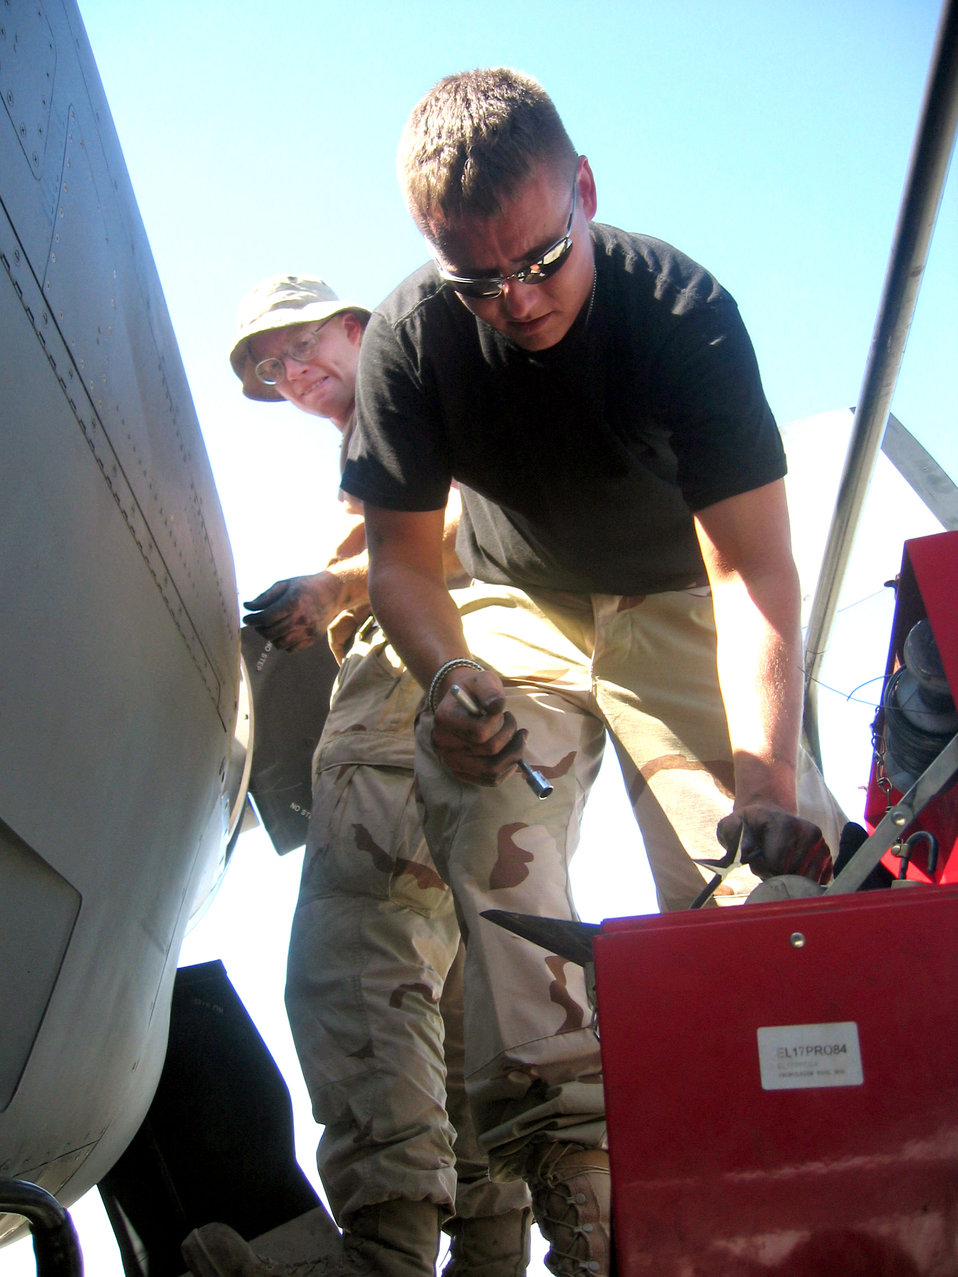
C-130 maintainers sustain mission readiness

KARSHI-KHANABAD AIR BASE, Uzbekistan -- Staff Sgt. Jess Foster selects tools during engine maintenance here. He is an engine mechanic with the 774th Expeditionary Airlift Squadron's maintenance flight and is deployed from the Mississippi Air National Guard.